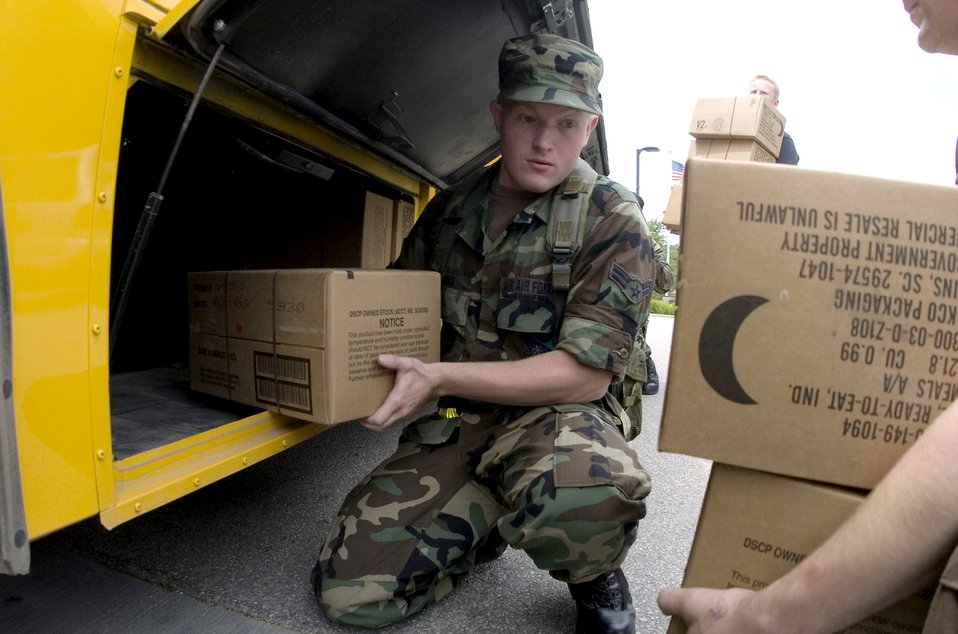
Air National Guard shores up as flood recedes

Airman 1st Class Dan DeJong unloads a school bus filled with Meals, Ready to Eat and sleeping bags at Mount Mercy College, Cedar Rapids, Iowa, June 15. More than 150 Airmen arrived in Cedar Rapids to help secure and recover areas that were affected by flood waters. Airman DeJong is assigned to the 185th Air Refueling Wing located in Sioux City, Iowa.